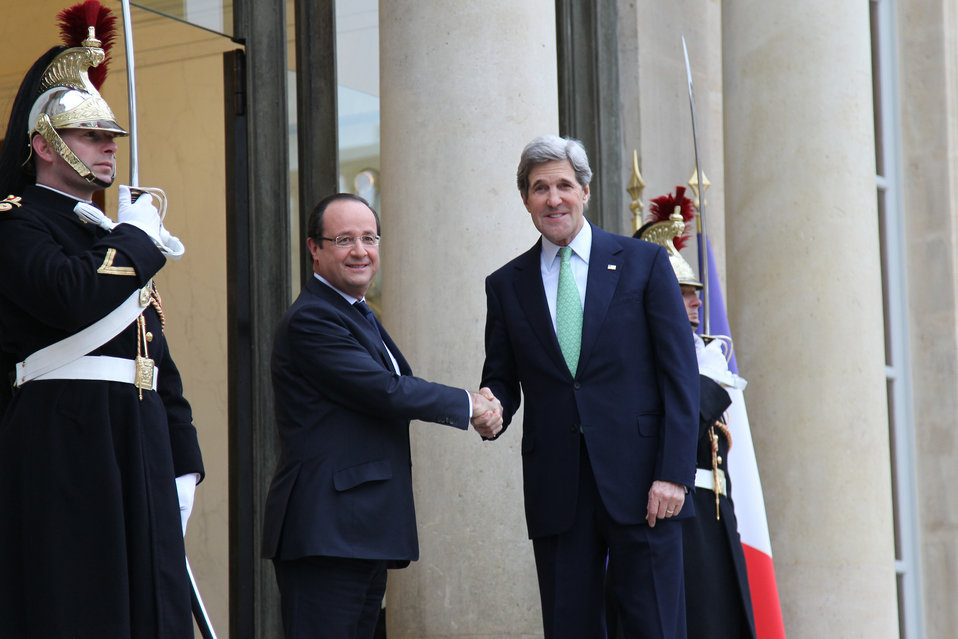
Secretary Kerry Is Greeted By President Hollande

U.S. Secretary of State John Kerry shakes hands with French President Francois Hollande upon arrival at Élysée Palace in Paris, France, on February 27, 2013.